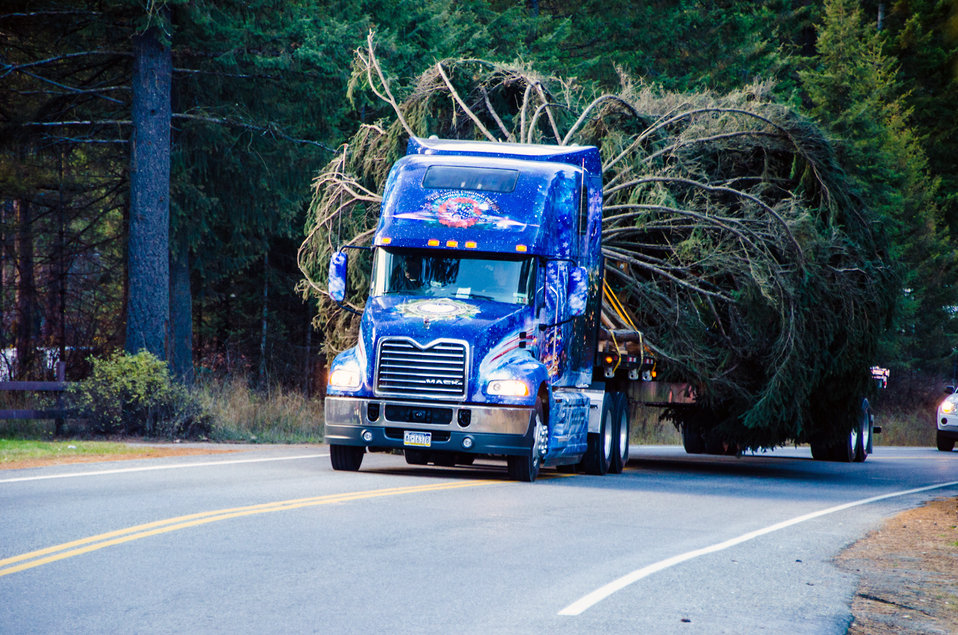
A specially built tractor-trailer transports the official 2013 Capitol Christmas Tree from the Colville National Forest in Washington. The Capitol Christmas tree is an 88-foot tall Engelmann spruce that was harvested on Nov. 1, 2013.